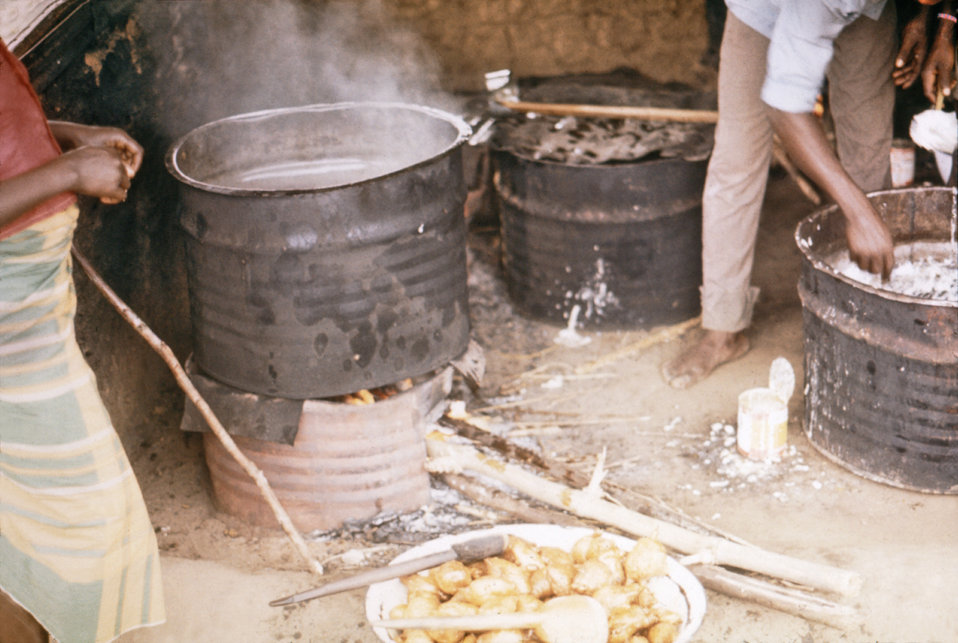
This image depicts a number of relief camp cooks preparing 'corn soya meal' (CSM) muffins as they're deep fried in palm oil. These muffins, plentiful in the area, were prepared for Nigerian refugees in relief camps during the Biafran War.